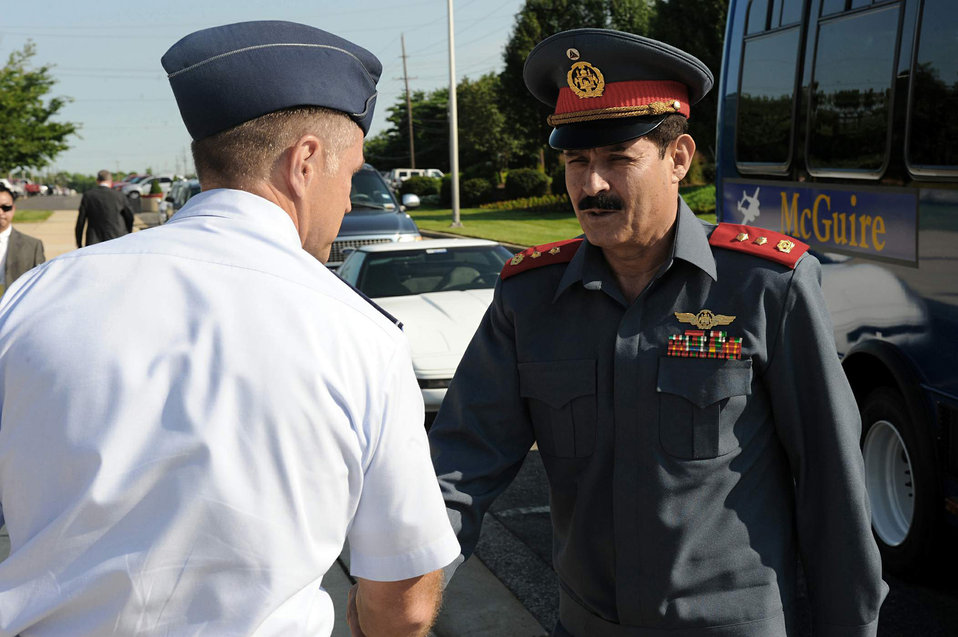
Afghan air corps commander calls Expeditionary Center a 'role model' for training

Col. Mark Ellis greets Afghan Maj. Gen. Mohammad Dawran July 13 at the U.S. Air Force Expeditionary Center on Joint Base McGuire-Dix-Lakehurst, N.J. General Dawran, commander of the Afghanistan National Army Air Corps, visited the installation to learn more about the Air Education and Training Command's Air Adviser Course housed at the Expeditionary Center on Fort Dix. Colonel Ellis is the commandant of the Expeditionary Operations School.